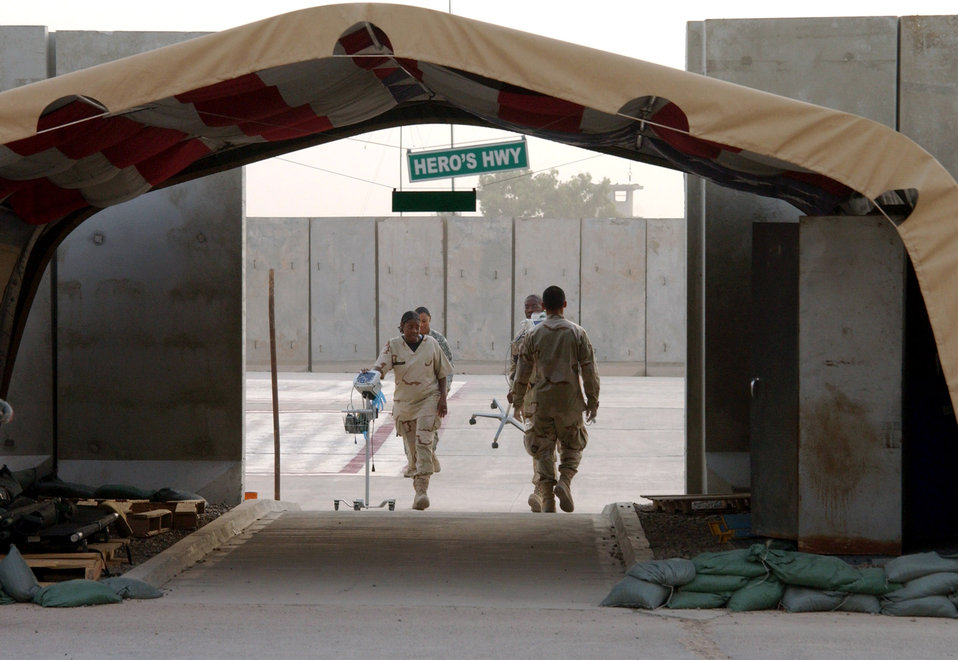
Balad's medics move into new facility

Volunteers, Airmen and Soldiers with the 332nd Expeditionary Medical Group move equipment and patients from the Air Force Theater Hospital's tent facility to the newly upgraded, pre-engineered facility at Balad Air Base, Iraq, Aug. 3. Starting at 4 a.m., about 150 base volunteers and 380 332nd EMDG Airmen moved patients and equipment to the new facility.